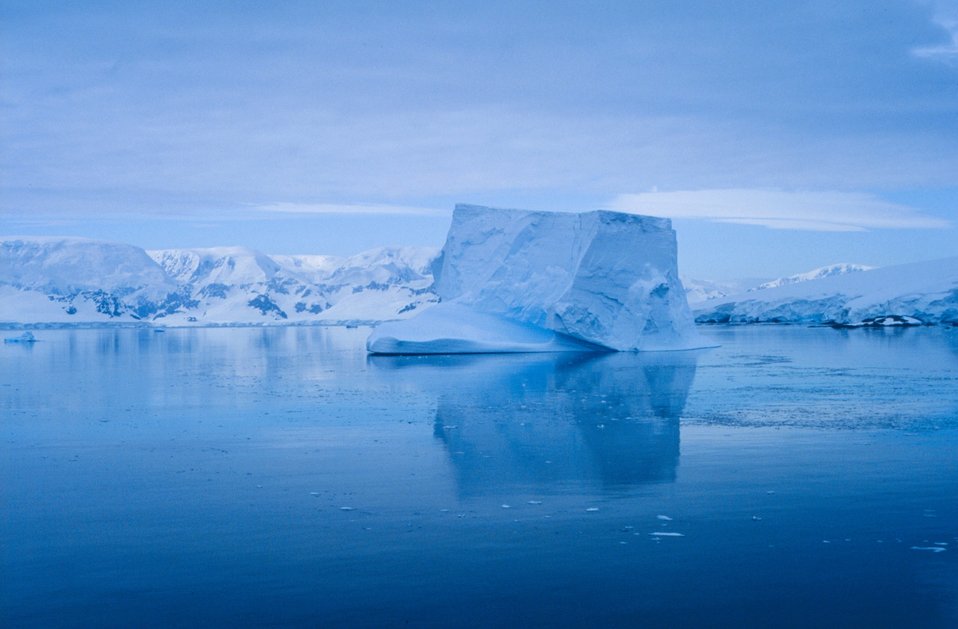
Serene iceberg drifting in the Neumayer Channel.